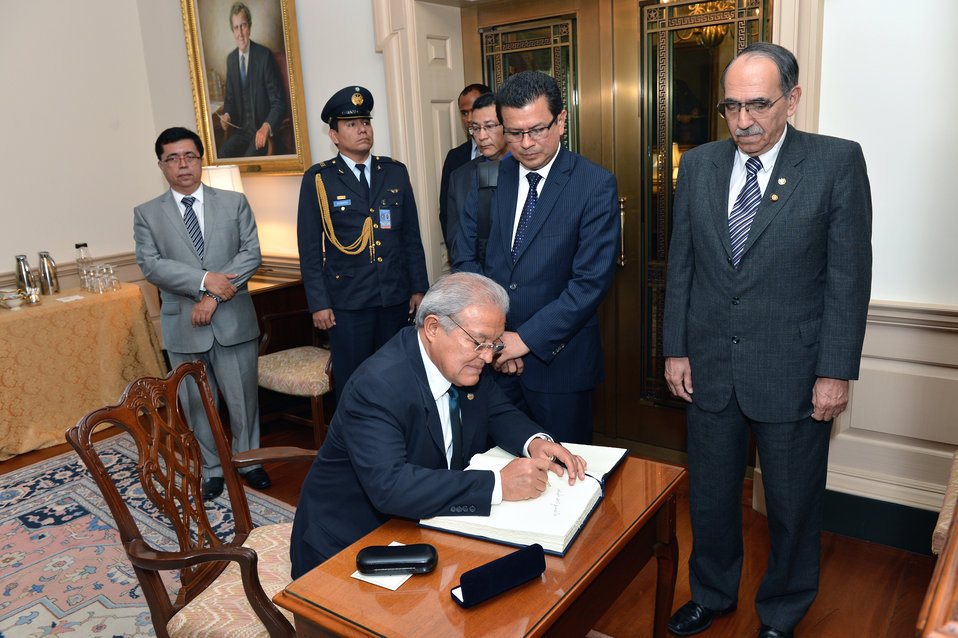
Secretary Kerry Meets With El Salvadoran President-Elect

El Salvadoran President-Elect Salvador Sanchez Ceren signs documentation during his visit with U.S. Secretary of State John Kerry at the U.S. Department of State in Washington, D.C. on May 12, 2014.